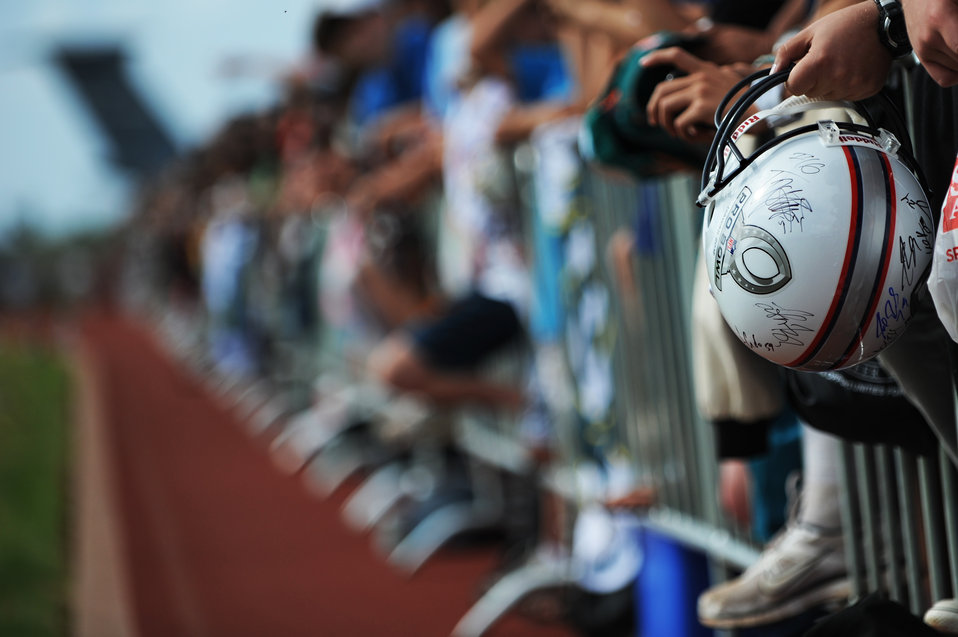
Going pro

Airmen, Sailors, Soldiers, Marines and their families gathered at Earhart Field on Joint Base Pearl Harbor-Hickam, Hawaii, to watch the National Football League's all-stars practice for the annual Pro Bowl Jan. 26, 2012. Football fans brought their footballs, helmets and memorabilia to get autographs from the professional players after each practice.